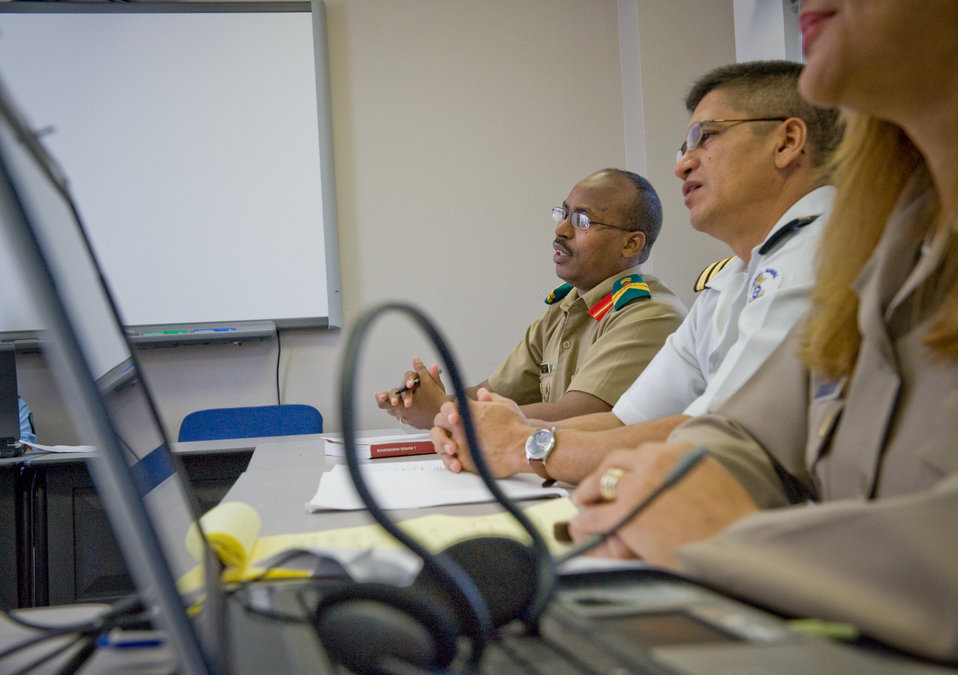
Lackland-based institute teaches English to partner nations

Laptop computers and headsets proliferate the classroom where Djibouti army Sgt. Saad Moussa Bouraleh (left) El Salvador navy Cmdr. Cesar Mejia Polanco discuss some intricacies of native languages during the American English Language Instructor Course Oct. 22 at the Defense Language Institute at Lackland Air Force Base, Texas.